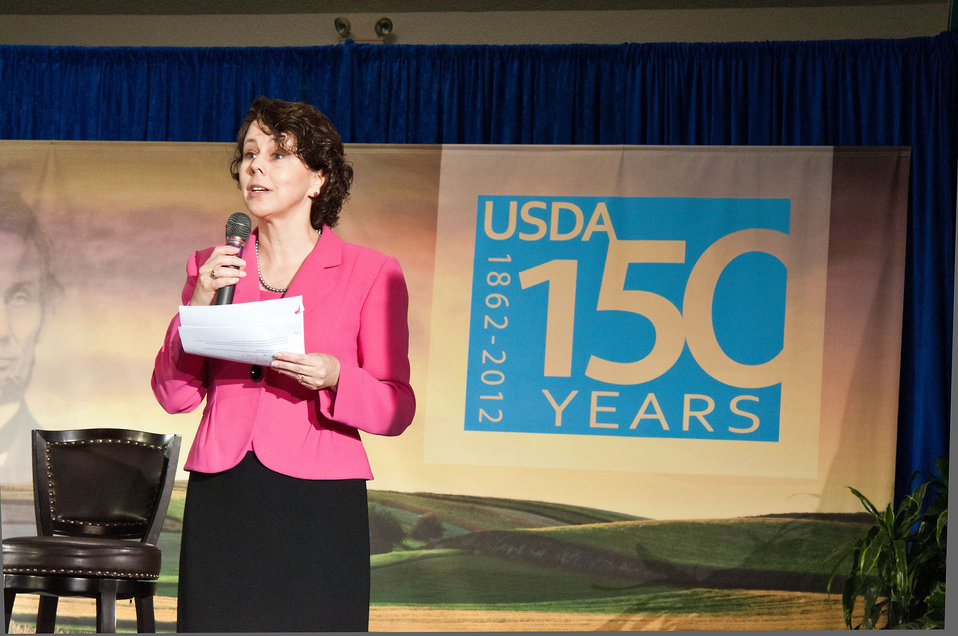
The Honorable Cecilia Munoz, Director, Domestic Policy Council and Assistant to the President spoke about the importance of the Department of Agriculture to the Nation at the United States Department of Agriculture’s 150th Anniversary celebration in Washington, DC Tuesday, May 15, 2012.